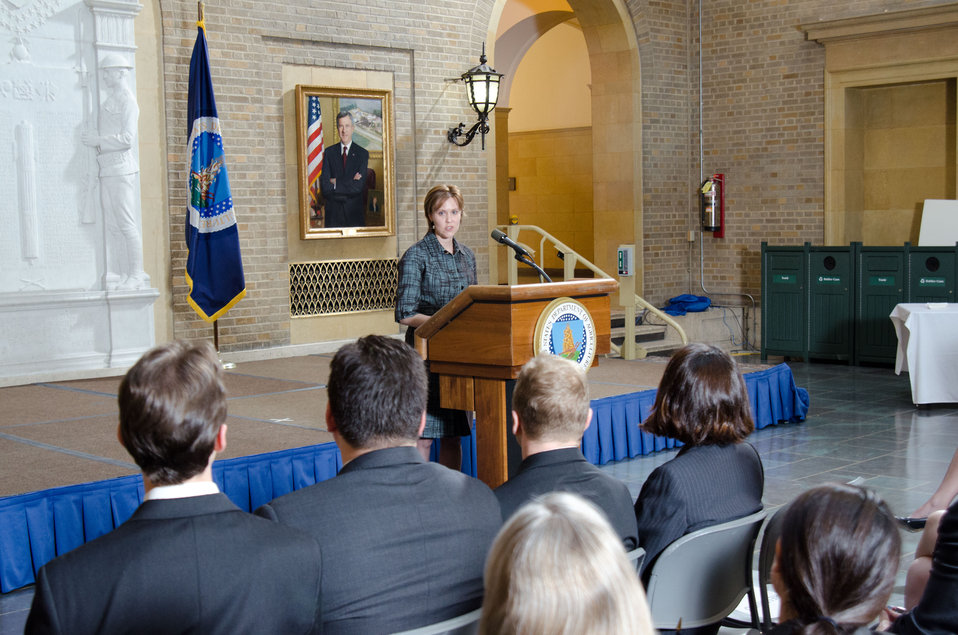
Agriculture Deputy Under Secretary Farm and Foreign Agricultural Services Darci Vetter was the keynote speaker for the U.S. Department of Agriculture (USDA), Foreign Service Oath of Office Ceremony for Agriculture Foreign Service Officers, in Washington, D.C., on Thursday, March 15, 2012.